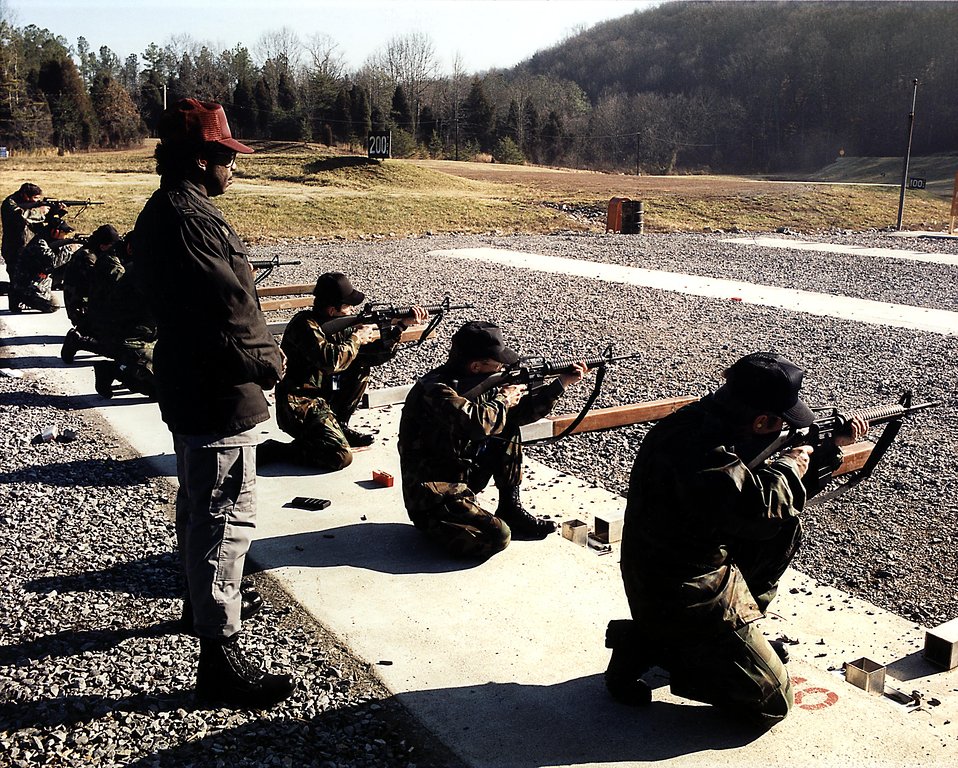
Instruction at outdoor rifle range.